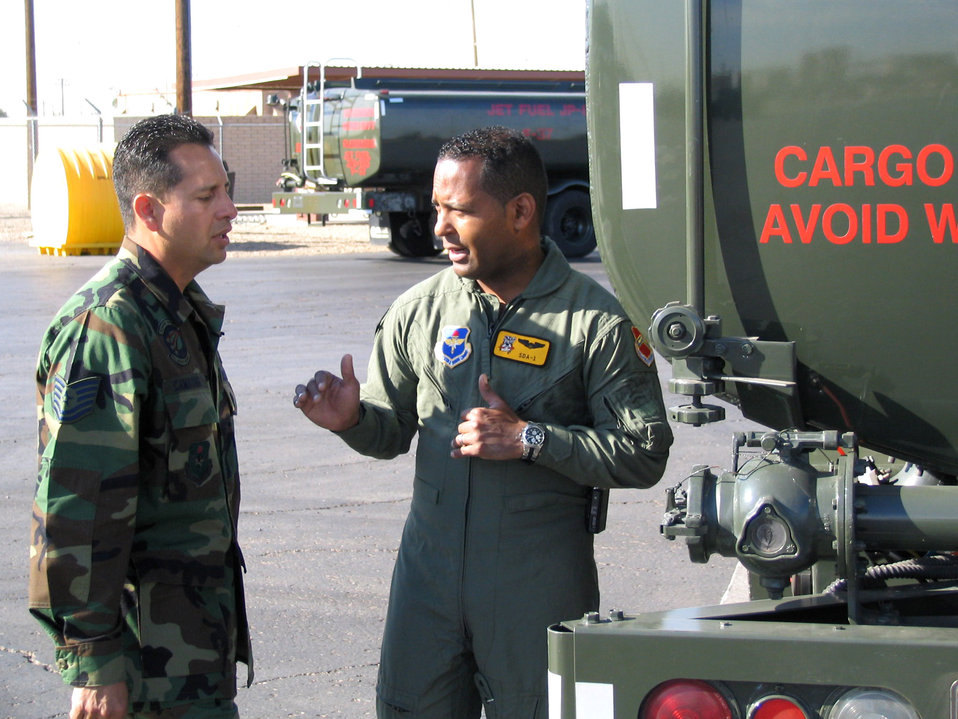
'Que Bien' Air Force Week

Tony Dandrades (right) interviews Tech. Sgt. Jose Camacho March 21 during his visit to Luke Air Force Base, Ariz., as part of Air Force Week. Mr. Dandrades, who served as an honorary commander for the day, is a Univision reporter for the nationally televised